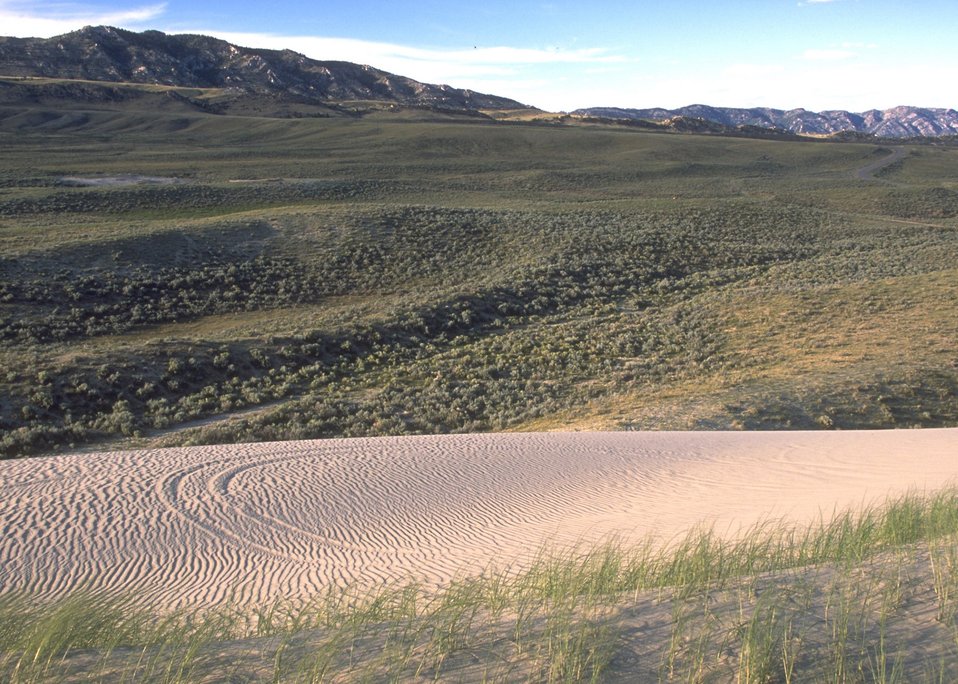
Sand dunes along the Alcova/Seminoe Back Country Byway, Rawlins Field Office.